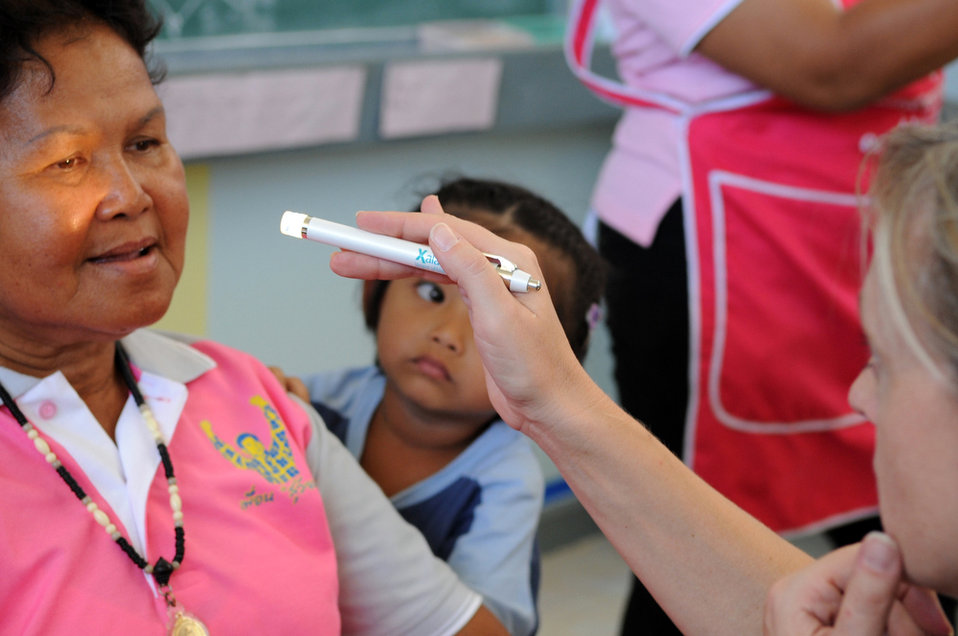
Airmen rewarded in Thailand exercise

Maj. (Dr.) Patti Fries examines the eyes of a local woman during a Cope Tiger 2010 community relations event March 4, 2010, at Ban Nong Sroung School in Thailand. Doctor Fries is a Guard member from the 131st Medical Group at Whiteman Air Force Base, Mo.